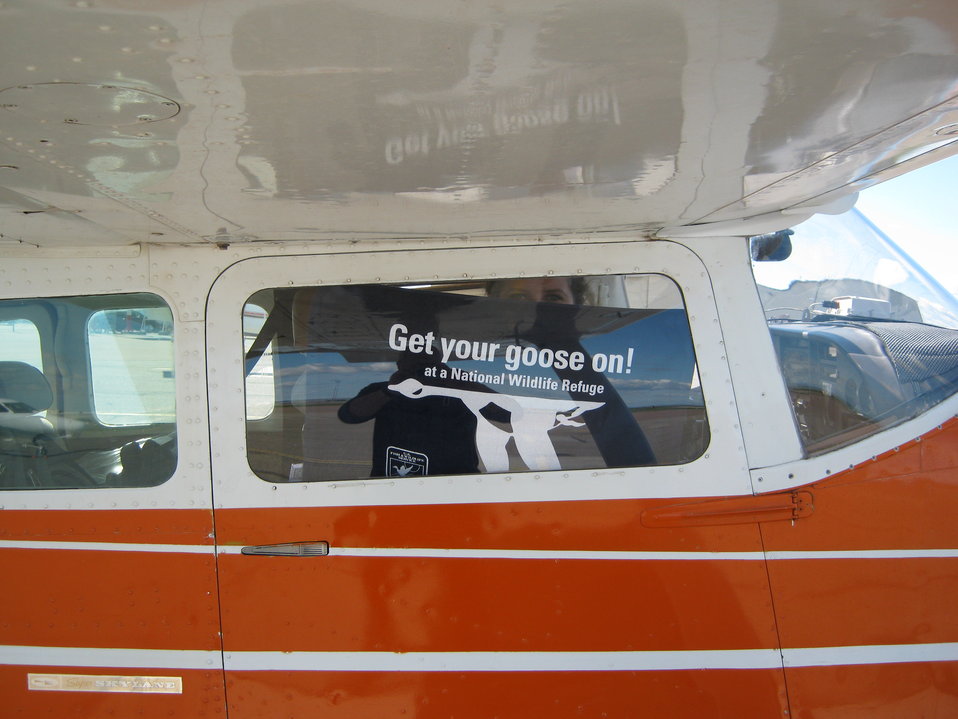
Get Your Goose On!

The goose takes flight at Benton Lake National Wildlife Refuge